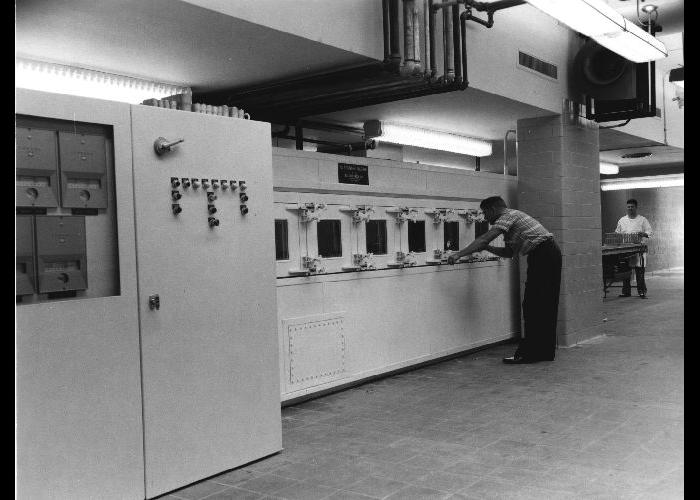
Mechanized laboratory glassware washer (Woodman machine).